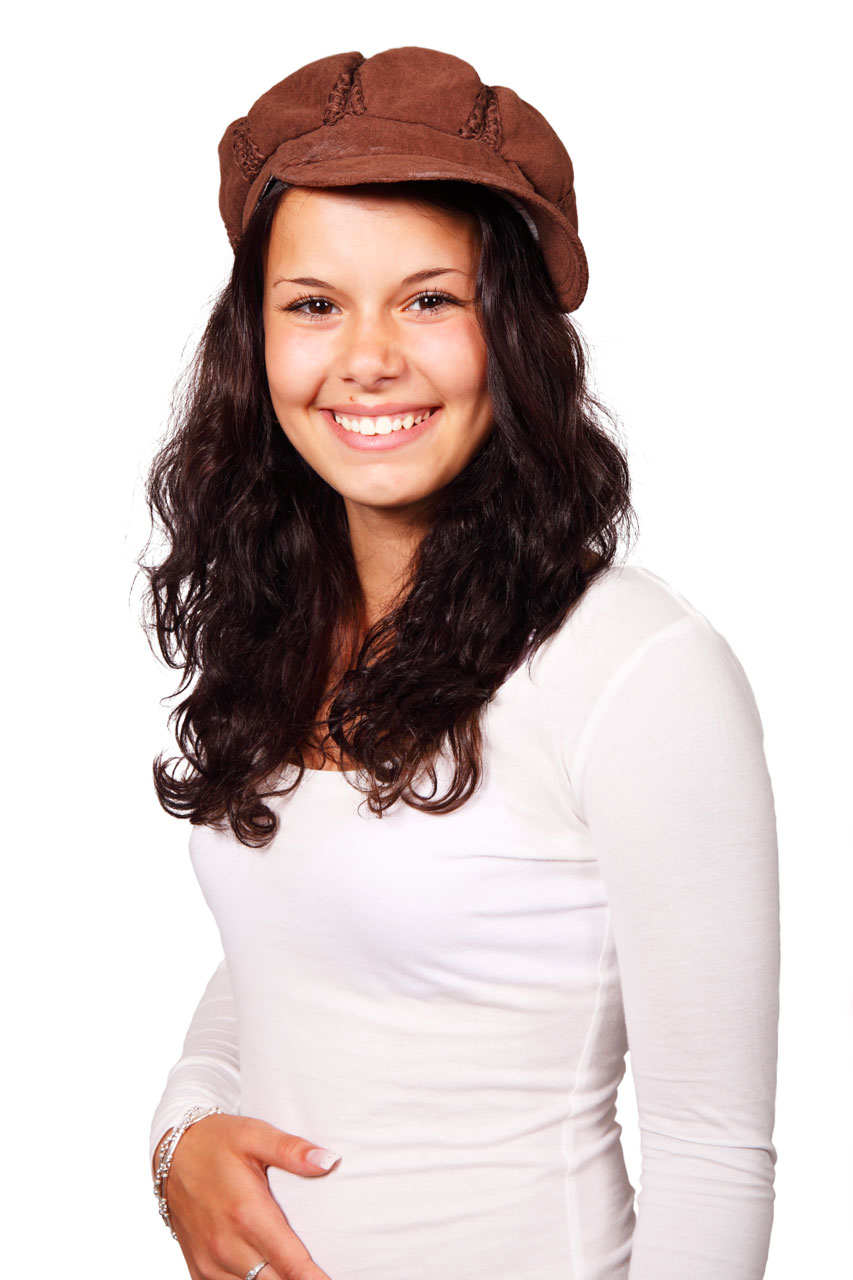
Smiling young woman with hat isolated on white background.